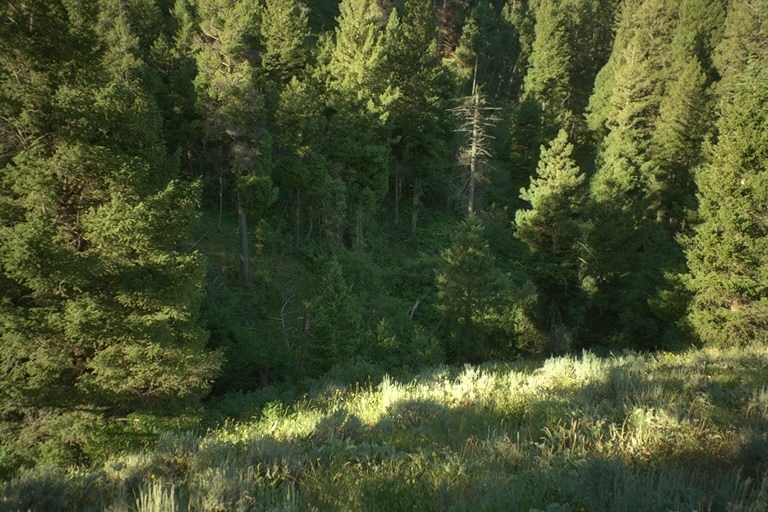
Riparian area Public Lands Salmon Field Office UCSC Upper Columbia Salmon Clearwater District